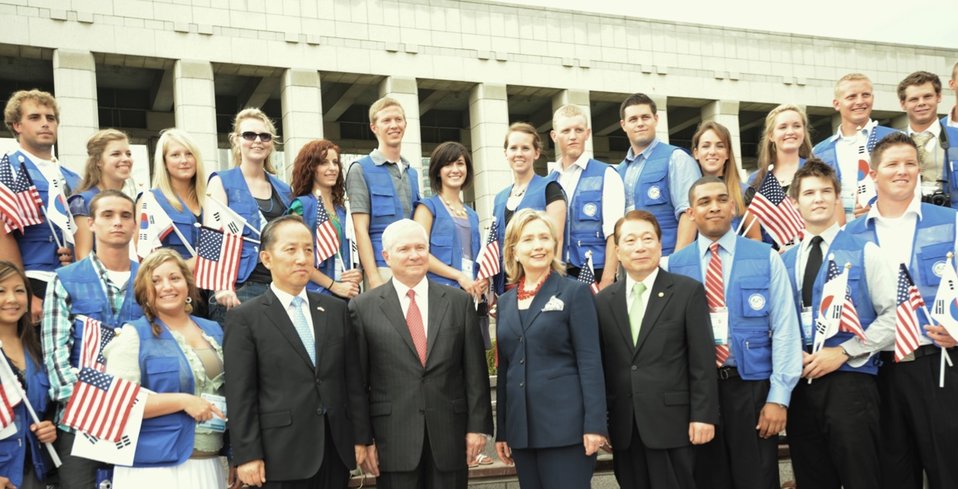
Republic of Korea Defense Minister Kim Tae-Young, Secretary Gates, Secretary Clinton, and Republic of Korea Foreign Minister Yu Myung-hwan Pose for a Photo With Children of Korean War Veterans

(L to R) Republic of Korea Defense Minister Kim Tae-Young, U.S. Secretary of Defense Robert M. Gates, U.S. Secretary of State Hillary Rodham Clinton, and Republic of Korea Foreign Minister Yu Myung-hwan pose with grandchildren of Korean War veterans at the Korean War Memorial in Seoul, South Korea, on July 21, 2010.